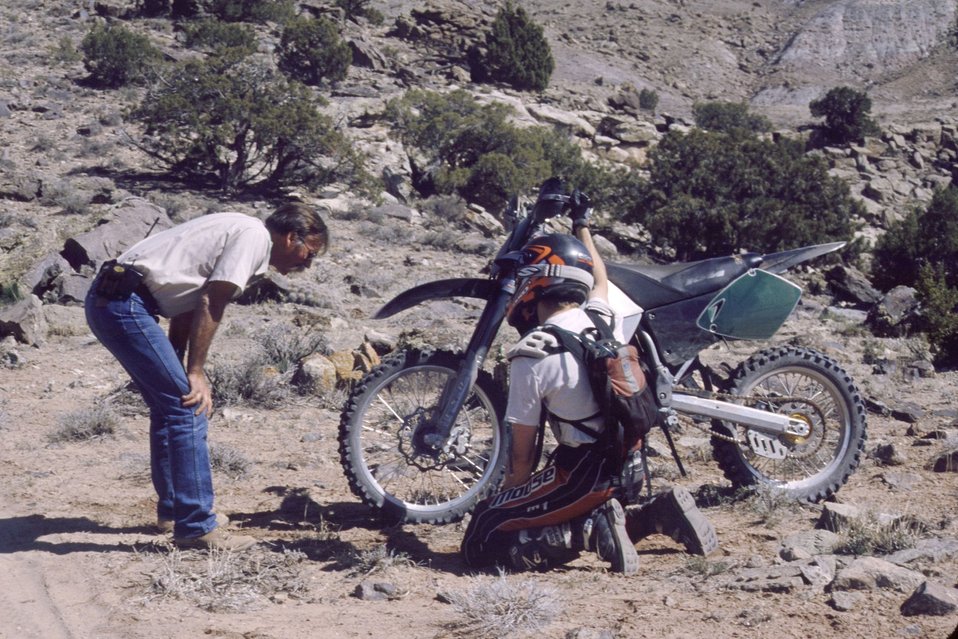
BLM Assistance